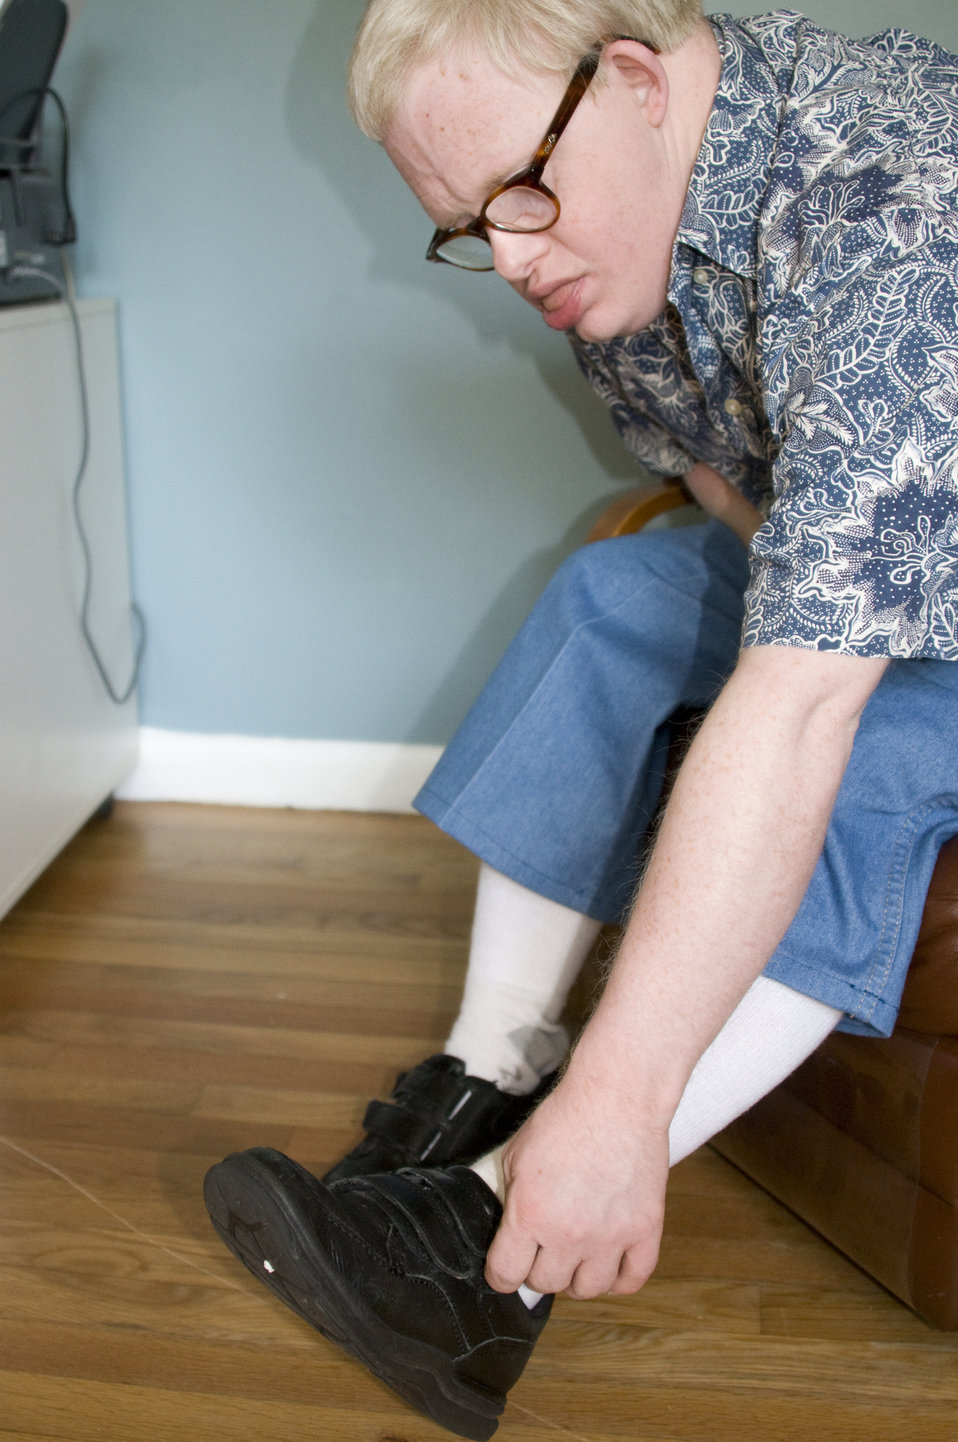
This image depicts an intellectually-challenged man in his home, sitting in a recliner, as he was putting on his shoes. He was already wearing his right shoe, and was adjusting the strap laces on his left shoe. Living with an intellectual disability does not necessarily mean existing in a non-functional state. There are many degrees of intellectual impairment ranging from an inability to function without assistance, to the ability to function independently, without assistance.